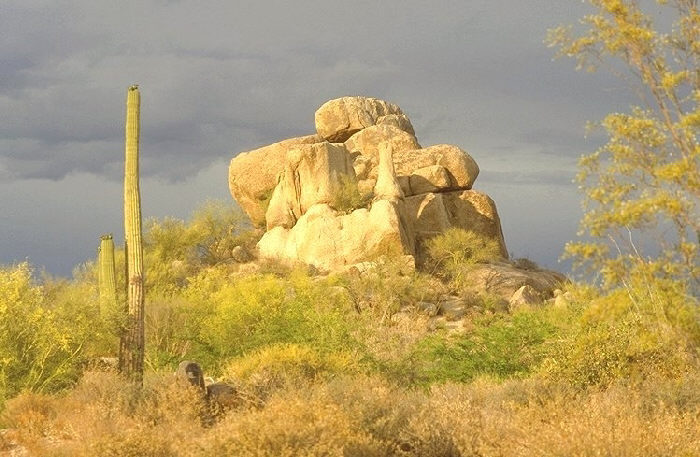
Desert scene at The Boulders, Carefree, Arizona.